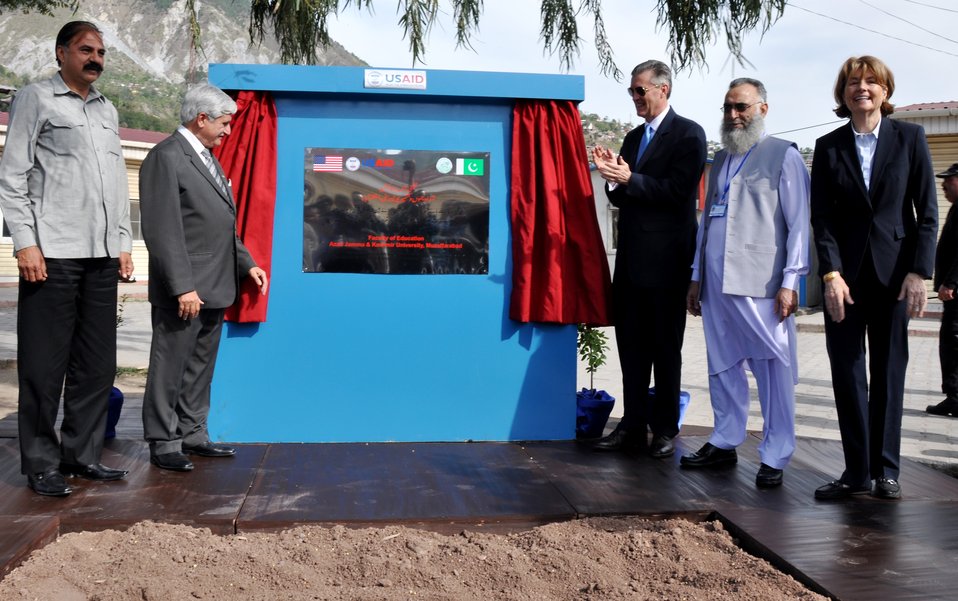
The United States Ambassador to Pakistan, Richard Olson broke ground for a U.S. funded construction of a new Faculty of Education building in Muzaffarabad, AJK. 17